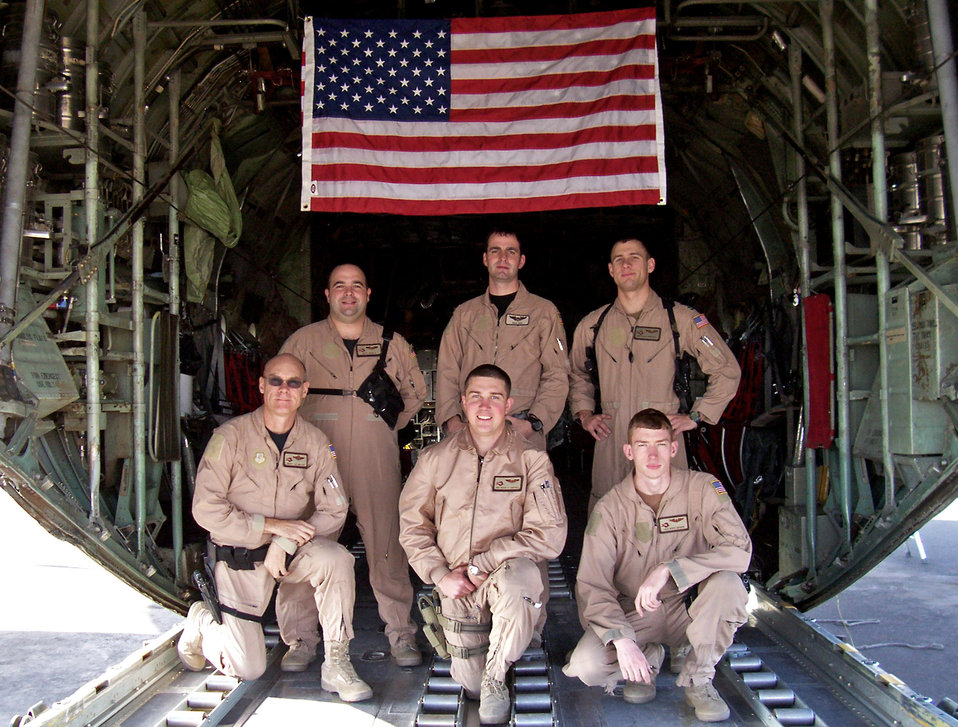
A ride to remember

A 737th Expeditionary Airlift Squadron crew out of Pope Air Force Base, N.C., flew a medical evacuation mission Jan. 31 in Southwest Asia that helped save the life of a 13-month-old Iraqi boy injured by an improvised explosive device. The IED attack in southern Iraq claimed the lives of both his parents. The aircrew, (top row left to right) Capt. Jeff Noble, aircraft commander, Capt. Neil Hoy, co-pilot, Capt. Nathan Preuss, navigator, and (bottom row left to right) Senior Master Sgt. J.R. Miller, engineer, Senior Airman Chase Cantrell and Airman 1st Class Ross Hagen, loadmasters, recently returned to Pope AFB from their deployment to a Southwest Asia air base in support of the war on terrorism. Their mission while deployed was to transport cargo and passengers throughout the deployed theater.